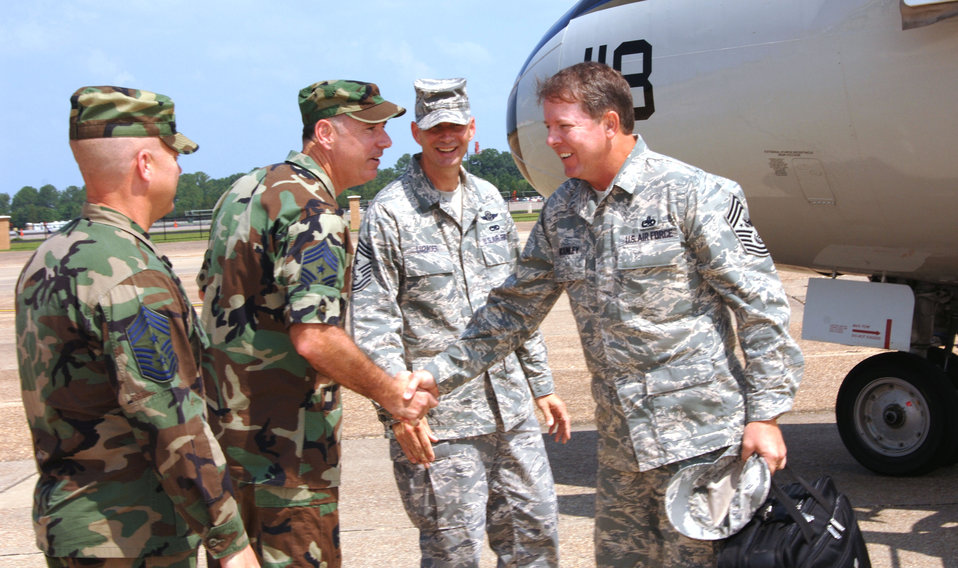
Senior Enlisted Leader Summit

Chief Master Sgt. of the Air Force Rodney J. McKinley is greeted by Air Education and Training Command and Maxwell Air Force Base, Ala., command chief master sergeants July 21 at Maxwell. Chief McKinley and other senior enlisted leaders arrived for the start of the 2007 Senior Enlisted Leader Summit held at nearby Gunter Annex, Ala.